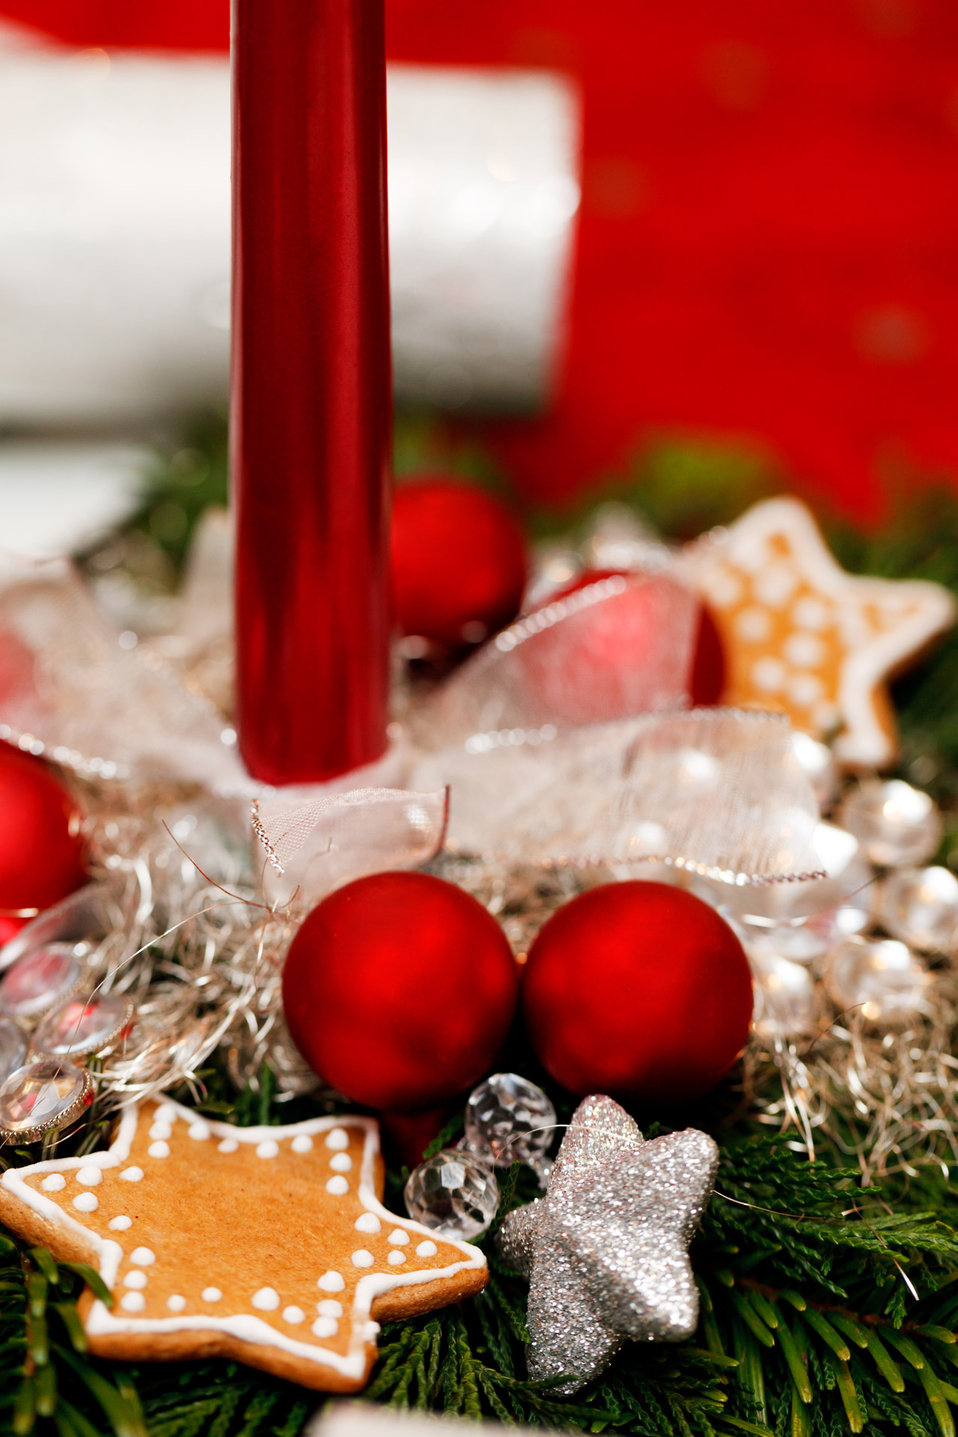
Christmas table decoration

Christmas table centerpiece decoration.